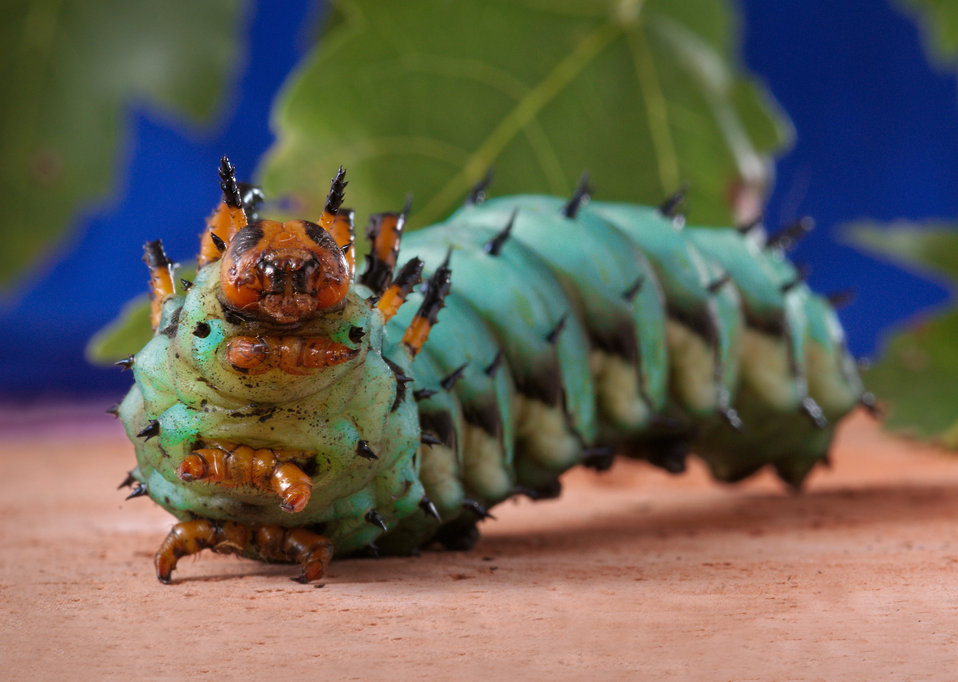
This 2008 image depicts a anterior inferior view of a Hickory Horned Devil caterpillar's head region, as the creature was rising up on its thoracic region body segments. It's hard to imagine, but keep in mind that this caterpillar is actually a developmental stage, or 'instar', through which the creature passes before becoming an adult, or 'imago' Regal Moth, Citheronia regalis. Just prior to entering its pupal stage, where it will metamorphose into the adult moth, the caterpillar will change its appearance, adopting more of a turquoise coloration, which looked to be the case in the specimen photographed here.